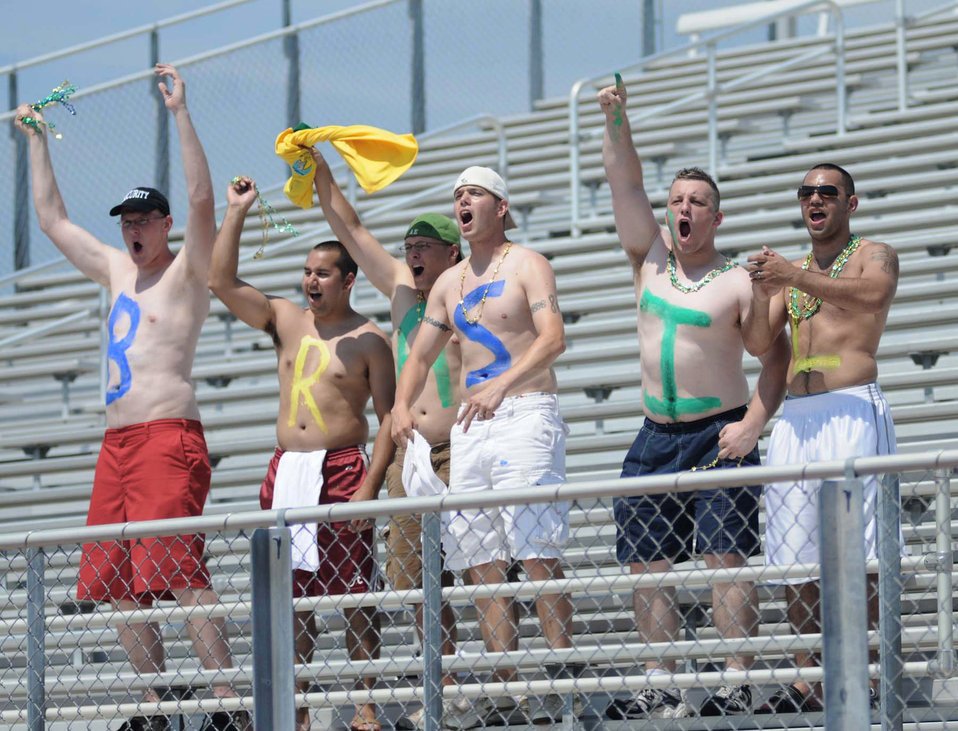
Brazil wins World Military Women's Soccer Championship at Keesler

Jacob Tarver (left to right), David MacDonald, Caleb Foy, Christopher Turknett and Juan Rivera cheer the Brazilian team to a 1-0 victory during the title game of the 5th Counseil du International Sports Militaire Women's Soccer Championship tournament June 13 at Biloxi High Stadium in Mississippi. The cheering squad is from the 81st Security Forces Squadron, one of the units on base that